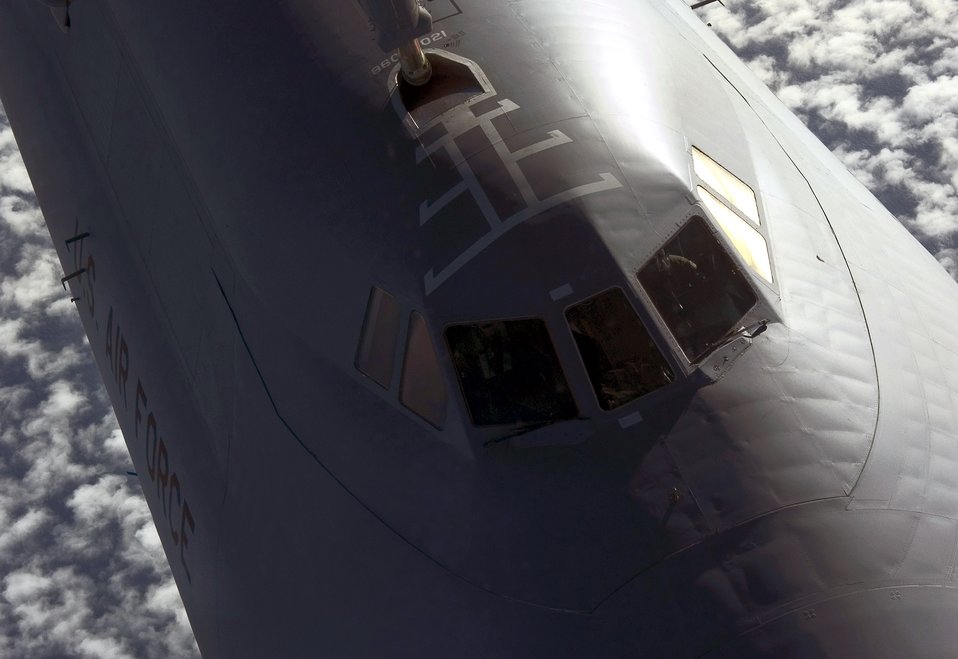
A Galaxy away

OVER THE PACIFIC OCEAN -- A C-5 Galaxy maintains contact behind an aerial refueling tanker here. The C-5 provides the Air Mobility Command officials intertheater airlift supporting U.S. national defense. Four turbofan engines power the aircraft, rated at 43,000 pounds thrust each. Each engine weighs 7,900 pounds, has an air intake diameter of more than 8.5 feet and is nearly 27 feet long.